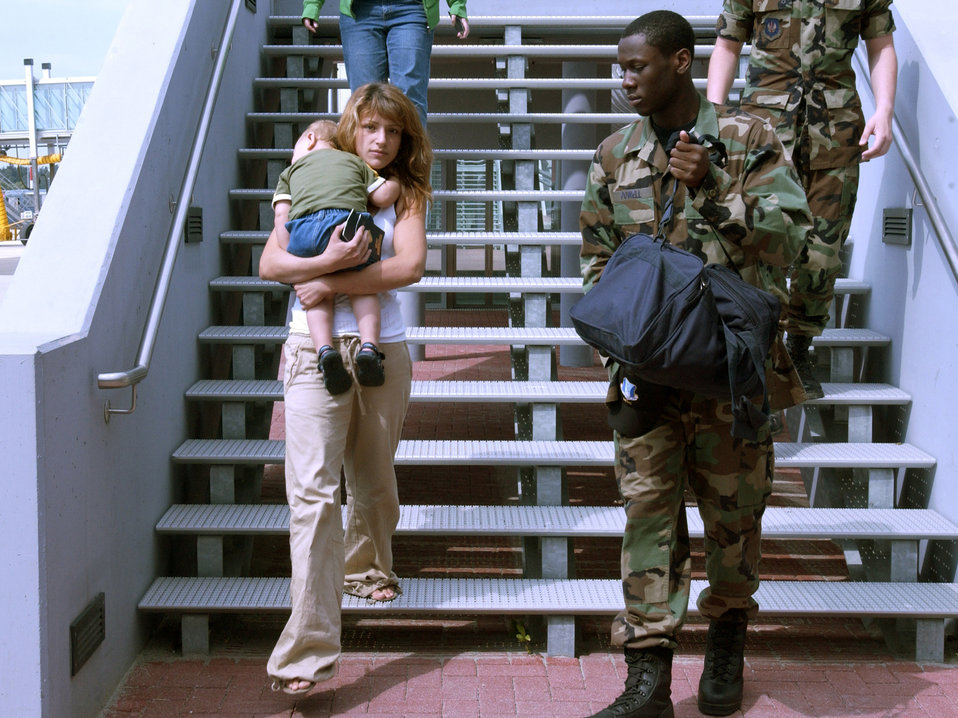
Heading to America

Airman Lester Powell assists a departee with her bags while she carries her child as they get ready to depart Ramstein Air Base, Germany for the continental United States on Sunday, July 23. Ramstein Air Base is assisting in the humanitarian efforts of the Lebanon crisis. Airman Powell is with the 435th Mission Support Squadron.